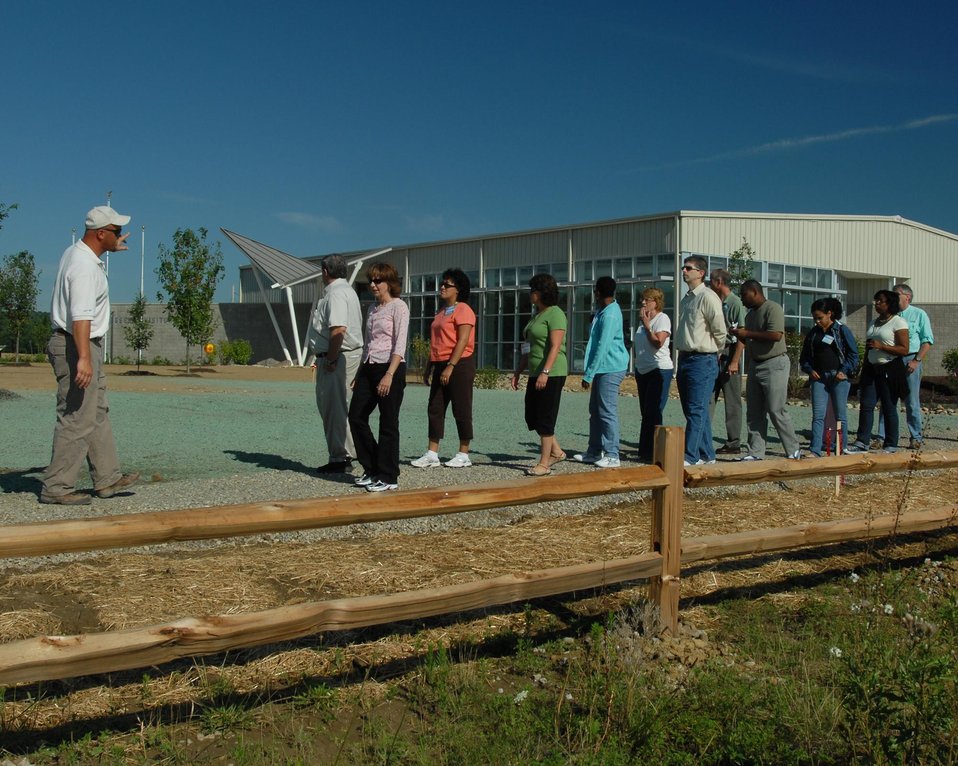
John Homer, S.M. Stoller Ecological Restoration Team Lead for the Fernald Preserve, leads a tour- newly constructed weapons-to-wetlands tail during the U.S. DOE Office of Legacy Management retreat in July 2008.